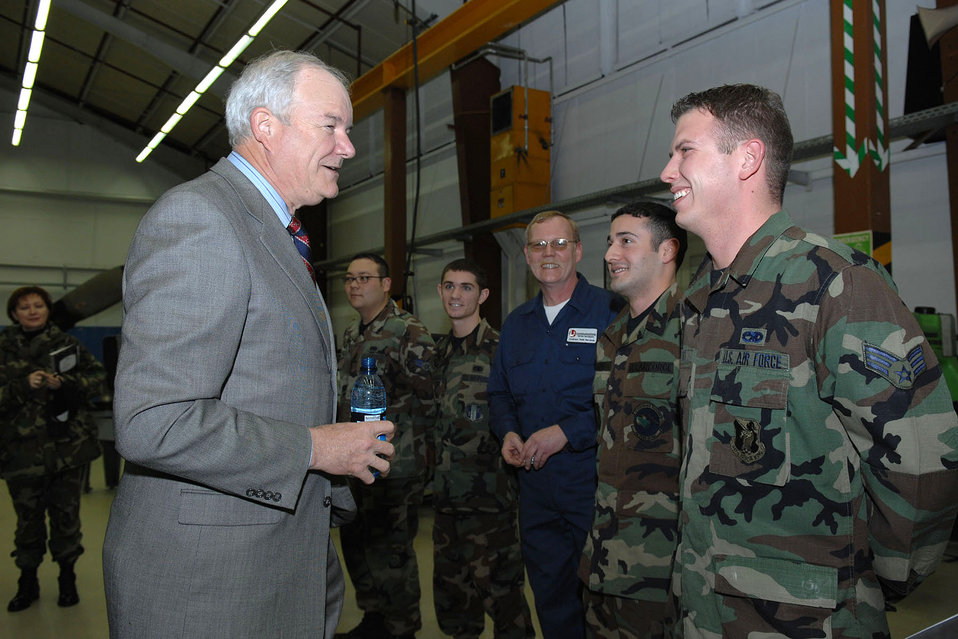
SECAF USAFE VISIT

Secretary of the Air Force Michael Wynn talks to Airmen Dec. 12 at the Propulsion Shop of the 86th Maintenance Squadron during a visit to Ramstein Air Base, Germany.